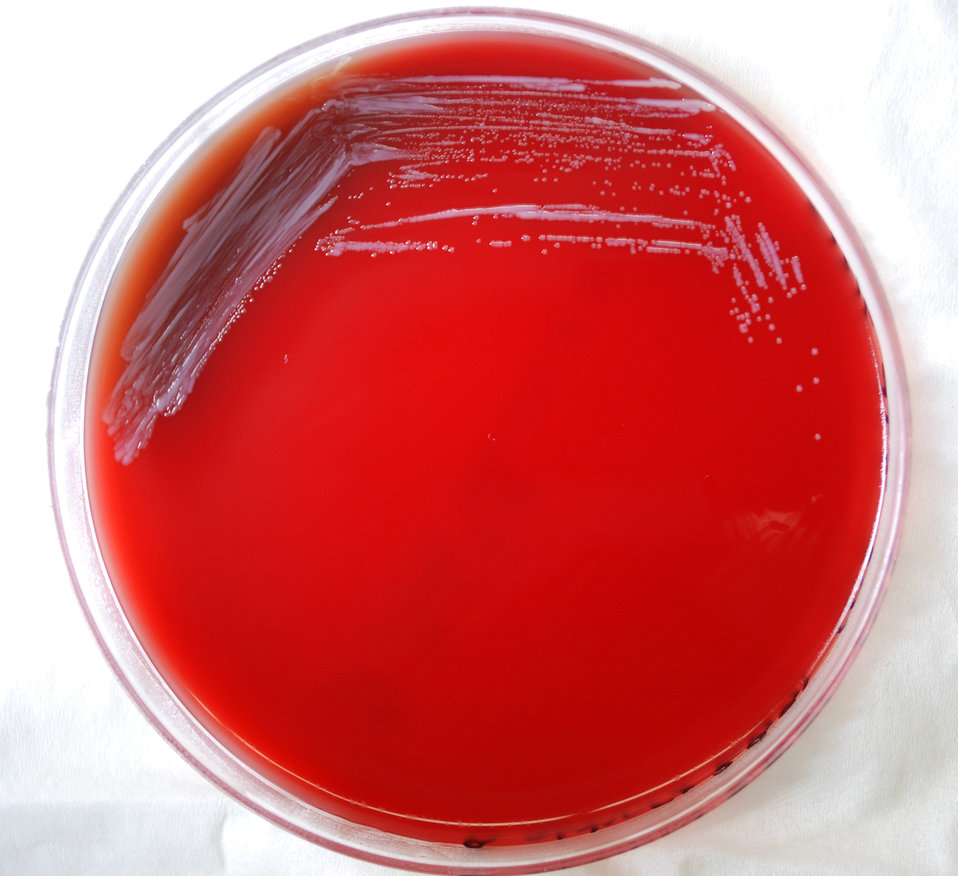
This photograph depicts the colonial morphology displayed by Gram-negative Brucella abortus bacteria, which was grown on a medium of sheep blood agar (SBA), for a 48 hour time period, at a temperature of 37�C. This Petri dish and its contents were incubated in a CO2 incubator. B. abortus bacteria are known to cause the disease brucellosis. For a closer view of these bacterial colonies, see PHIL 12256.